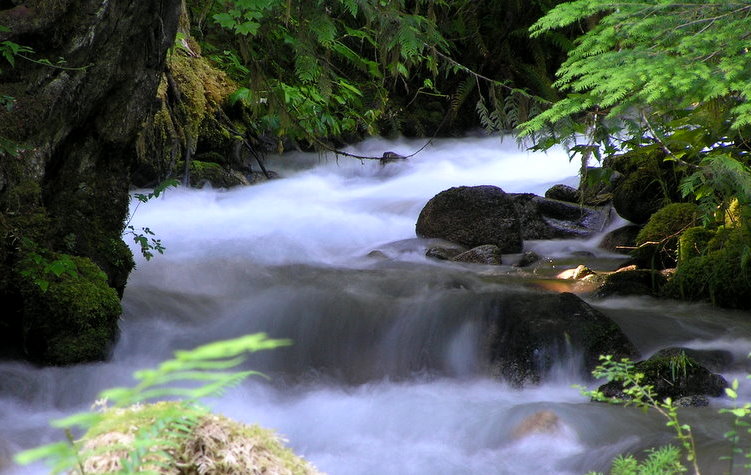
Uploaded by request of Larry Weeks

Taken at Boulder Creek just east of Marblemount, Washington.

A ray of light broke through the tree canopy and I was able to set up my tripod and capture it. Light is just to right of center on the rocks.